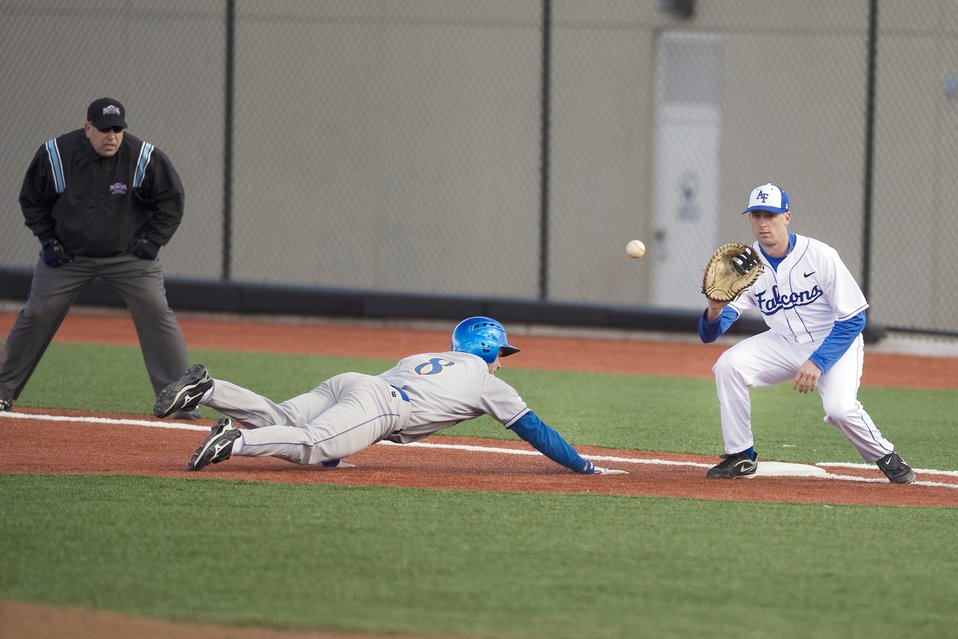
Falcons defeat South Dakota State

It's the referee's call when the ball and a South Dakota State Jackrabbit head toward the same place in the match up March 5, 2010, at the U.S. Air Force Academy's Falcon Field in Colorado. Air Force rallied to win 12-11.